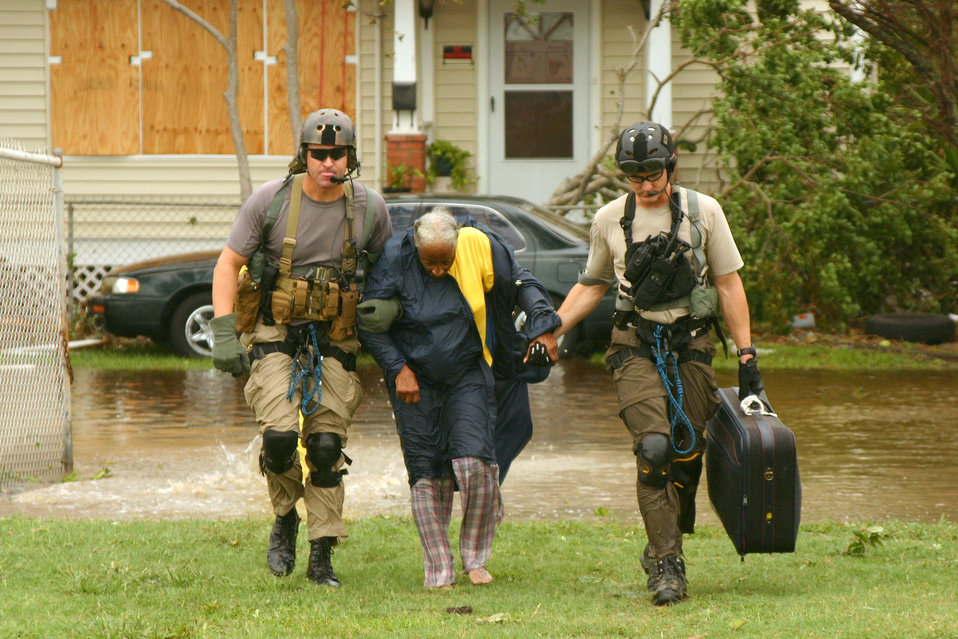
Helicopter aircrews rescue hurricane victims

Joint Task Force-129 pararescuemen rescue a hurricane victim Sept. 13 in Galveston, Texas. The JTF-129 crews rescued 48 peoole and pets stranded in the Galveston area.